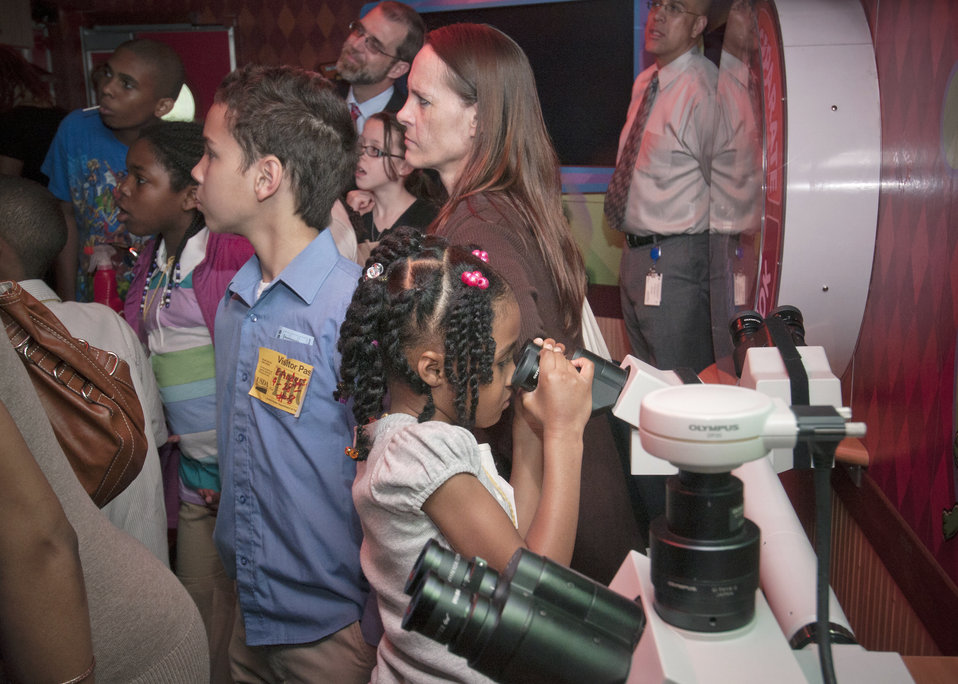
Branaya Brown looks through a microscope in the Discovery Zone truck. This vehicle is a 40-foot truck that features several hands-on, interactive activities, cool lighting and sound effects, and eye-catching educational tools to teach folks about the four easy steps that families can take to avoid food borne illness. The truck was parked in front of the U. S. Department of Agriculture (USDA) as part of USDA’s “Take Your Child to Work Day” event held in Washington, DC, on Thursday, April 28, 2011.